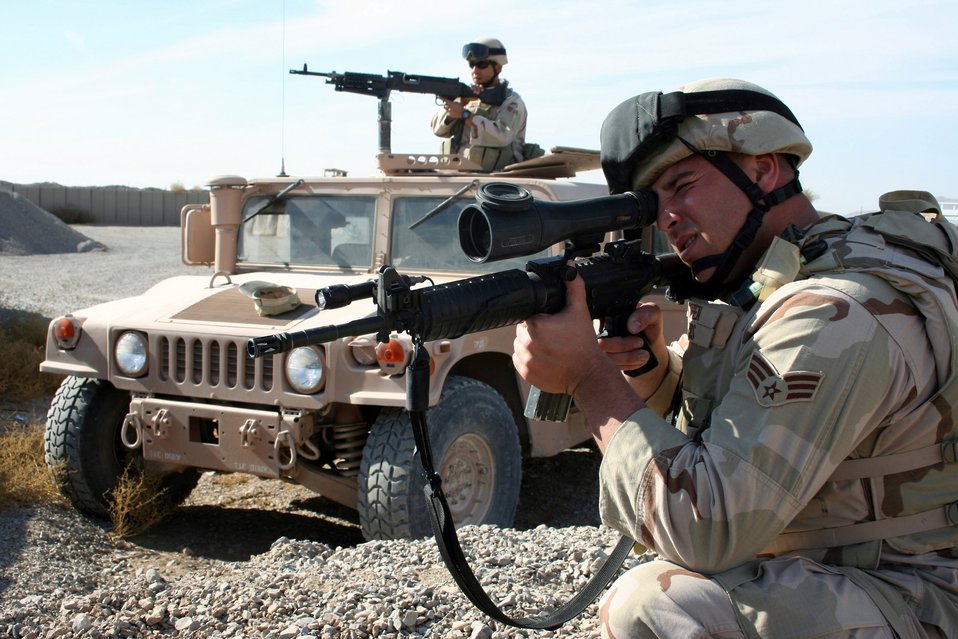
Secured perimeter

KANDAHAR AIRFIELD, Afghanistan (AFPN) -- Senior Airman Alex Cohen, right, and Senior Airman Anthony Nuno secure the perimeter. Both Airmen are with the 451st Expeditionary Security Forces Squadron and deployed from Moffett Federal Airfield in Mountain View, Calif.